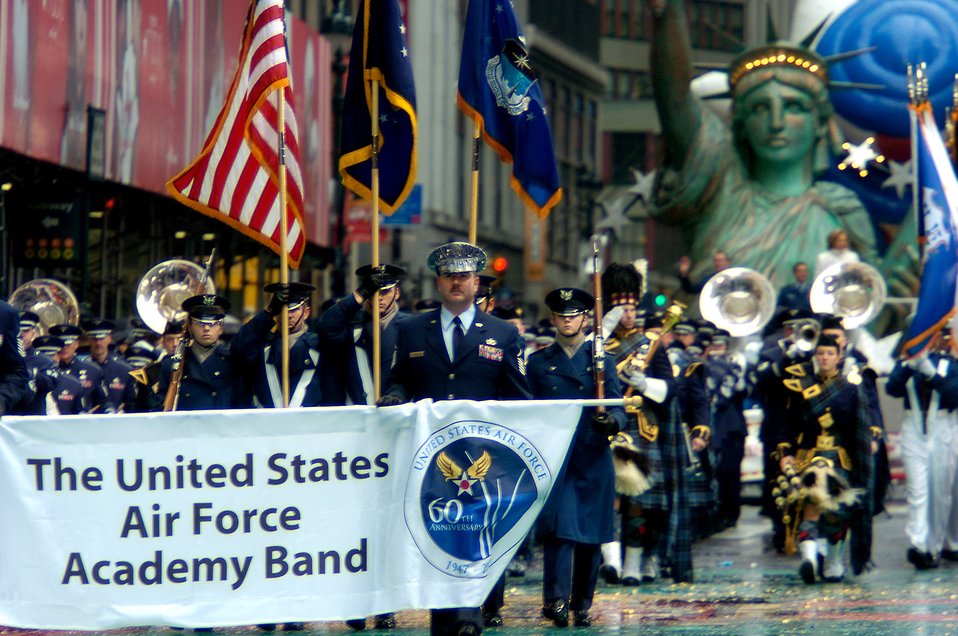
Macy's Thanksgiving Day Parade

The U.S. Air Force Academy Marching Band marches down Broadway Nov. 23 at the 80th Macy's Thanksgiving Day Parade in New York City, N.Y.